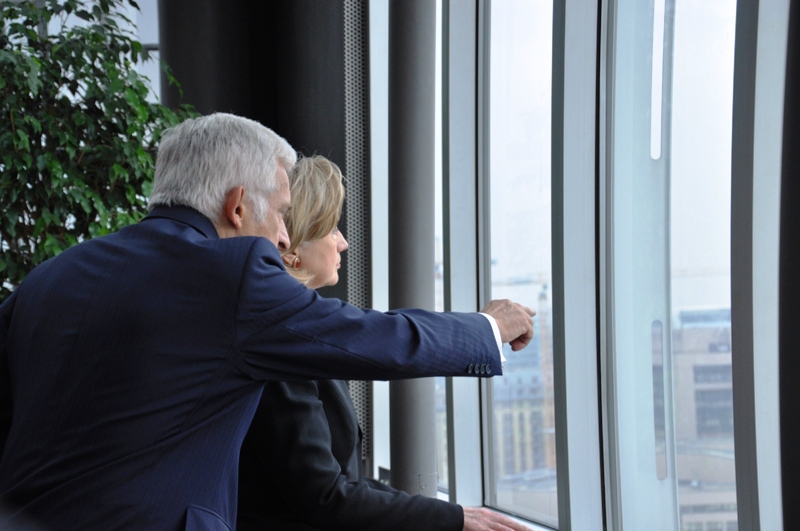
European Parliament President Buzek Shows Secretary Clinton the View of Brussels

President of the European Parliament Jerzy Buzek shows U.S. Secretary of State Hillary Rodham Clinton the view of Brussels on the top floor of the European Parliament building in Brussels, Belgium, on October 14, 2010.